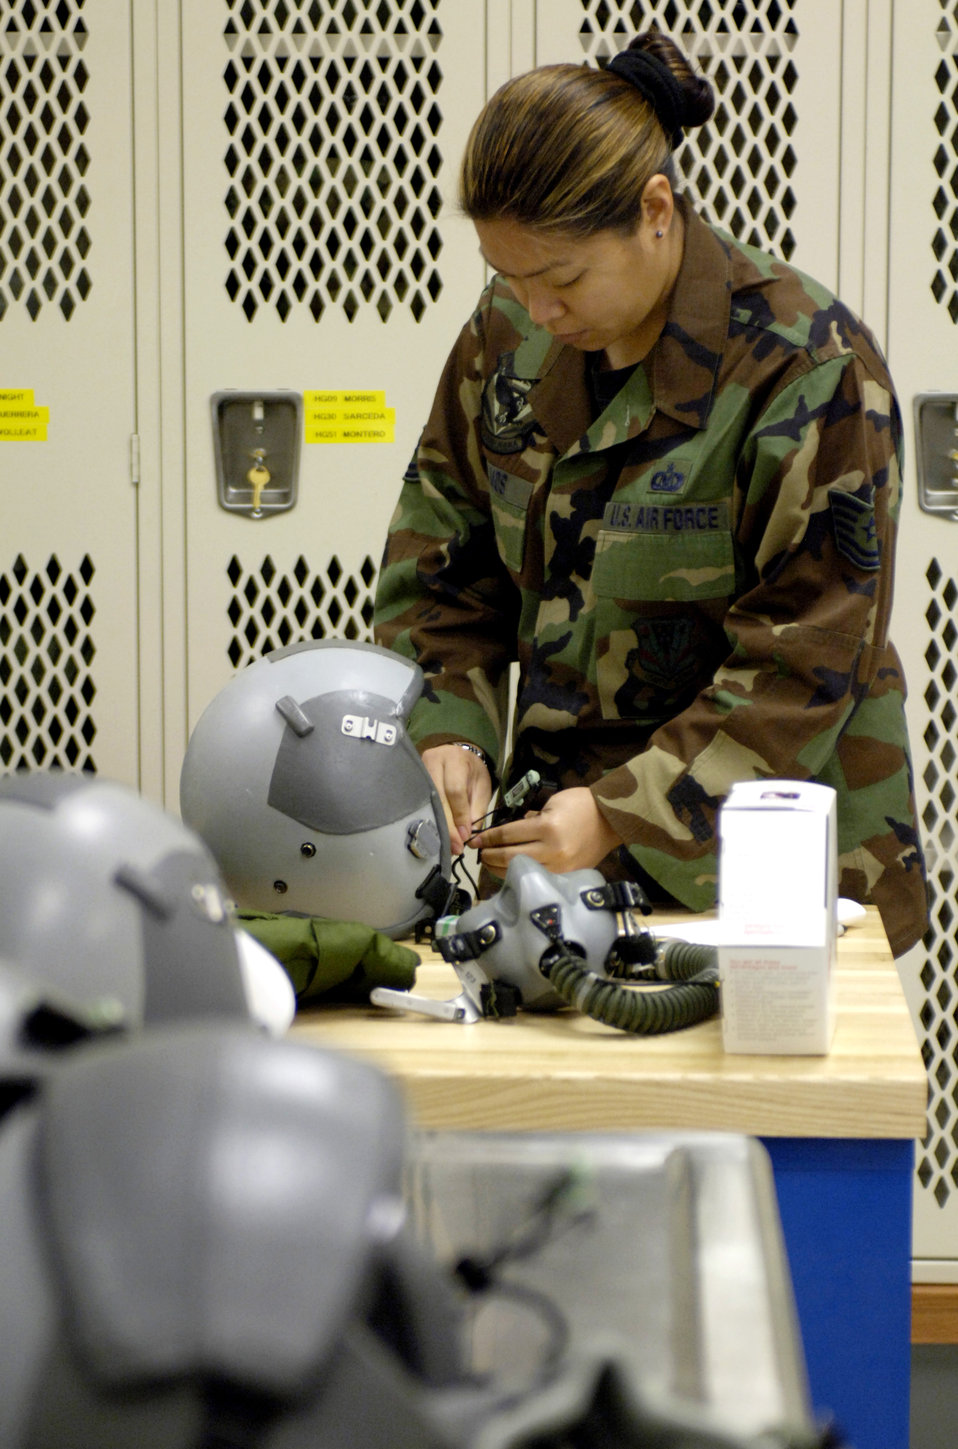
Life support

HICKAM AIR FORCE BASE, Hawaii (AFPN) -- Tech. Sgt. Michele Ramos maintains and inspects an aircrew helmet and oxygen equipment. The life support shop is a combination of Hawaii Air National Guard and active-duty Airmen who support the 15th Airlift Wing, 154th Wing and transient aircraft. Airman Sorge is with the 204th Airlift Squadron.